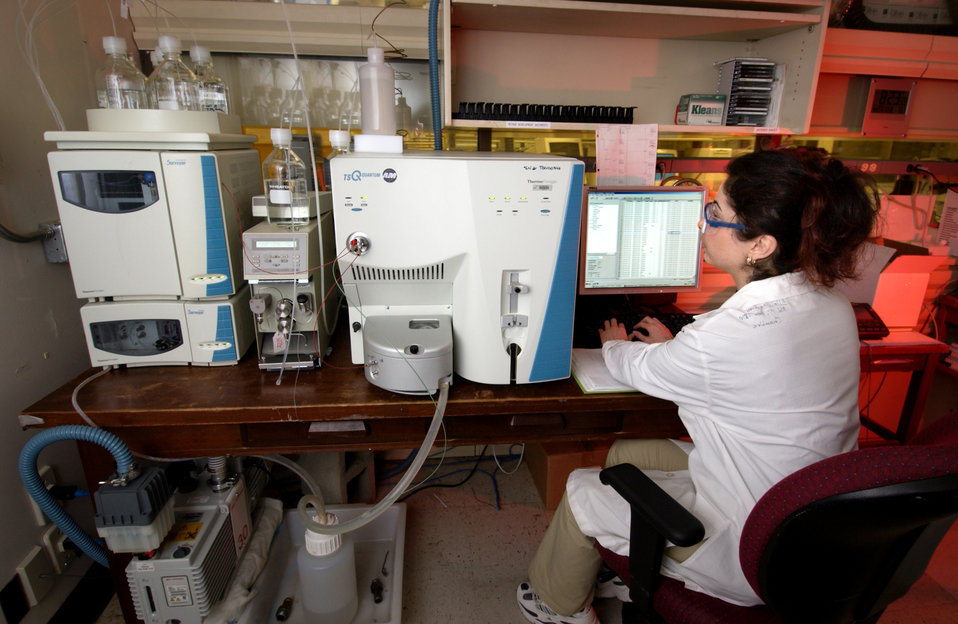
This photograph showed a CDC chemist, Ella Samandar, setting up a liquid chromatograph - mass spectrometer system before starting an analytical run in the CDC's Personal Care Products Laboratory (PCPL).